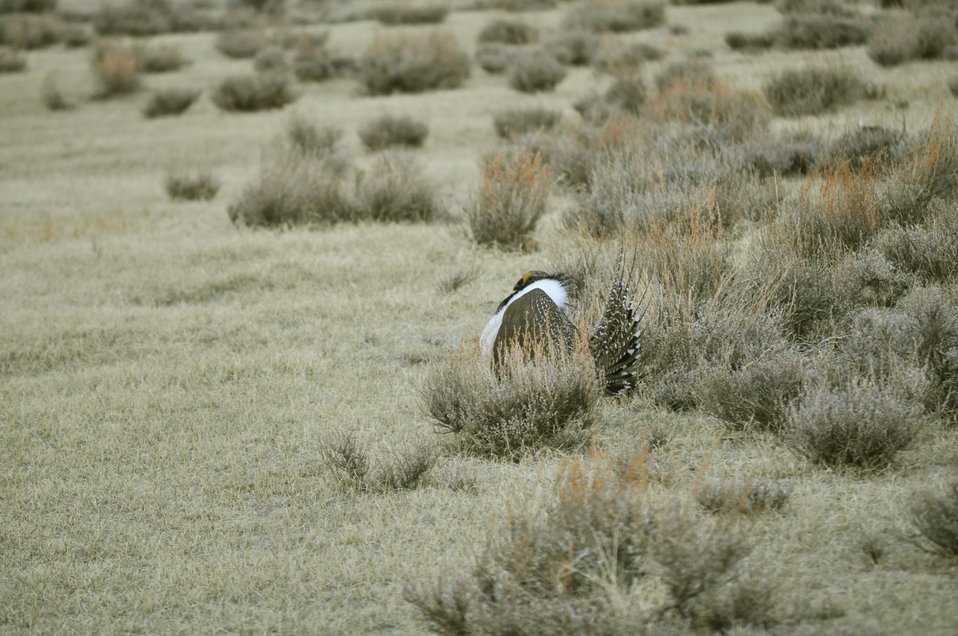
Male greater sage-grouse struts at lek (dancing or mating grounds) to attract females near Bodie, California.